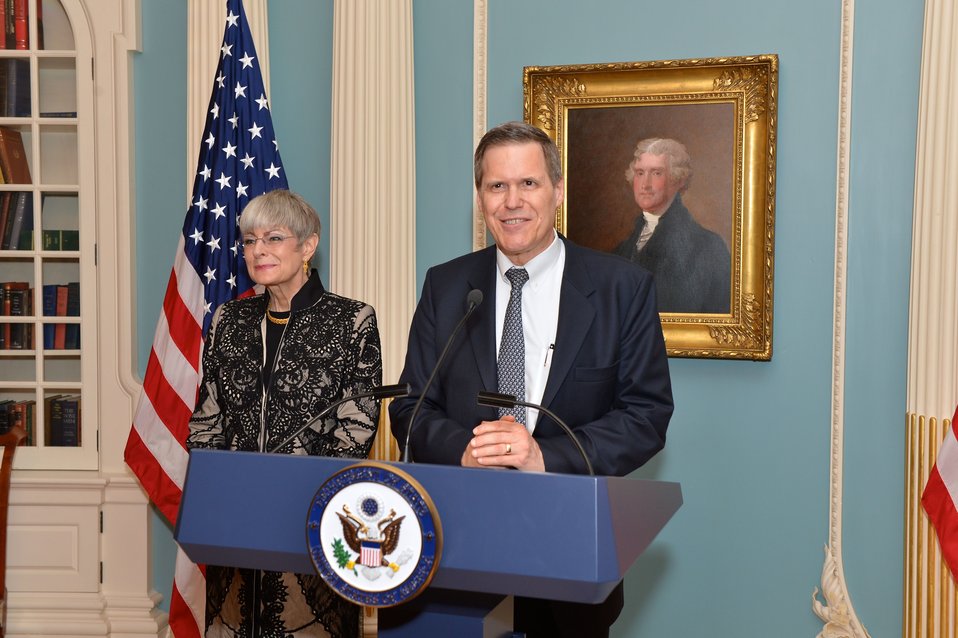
Ambassador Tueller Delivers Remarks at Swearing-in Ceremony

With his wife, DeNeece Tueller looking on, Ambassador Matthew Tueller delivers remarks at his swearing-in ceremony to become the U.S. Ambassador to Yemen, at the U.S. Department of State in Washington, D.C., on May 8, 2014.